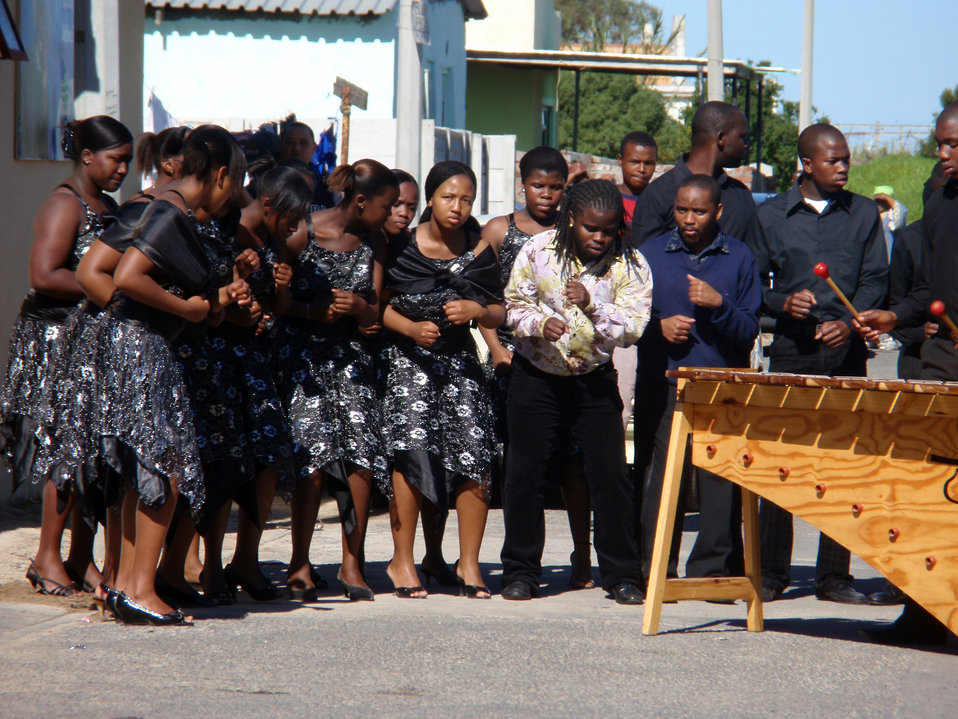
Behind the Scenes: Secretary Clinton Visits Victoria Mxenge Housing Development

A dance group performs as U.S. Secretary of State Hillary Rodham Clinton arrives at the Victoria Mxenge Housing Development in Cape Town, South Africa August 8, 2009.